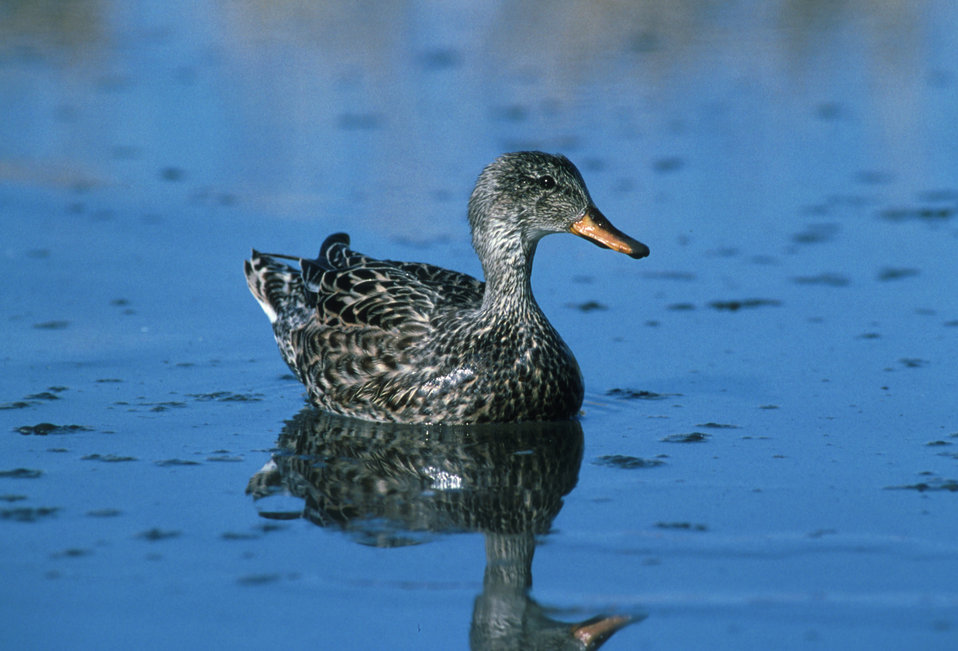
Female gadwall duck at Lower Klamath NWR, California

Scientific Name: Anas streppera
Gadwall are one of the most common ducks during the summer months on Tule Lake and Lower Klamath National Wildlife Refuges. During the spring and fall migrations, however, their numbers
can be overshadowed by the influx of migrating mallard and pintail ducks.

Dave Menke/USFWS